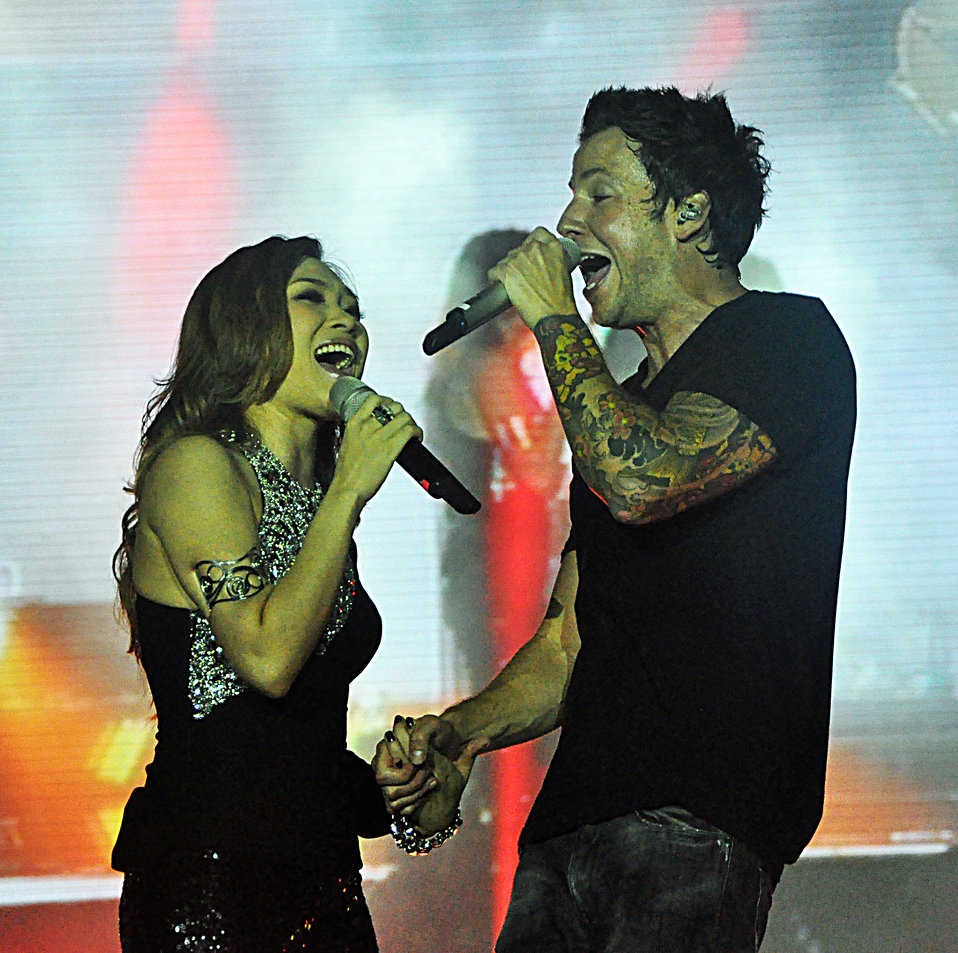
My Tam and Pierre Bouvier of Simple Plan join hands at MTV EXIT concert in Hanoi against human trafficking

USAID co-sponsors MTV EXIT concert, campaign against human trafficking